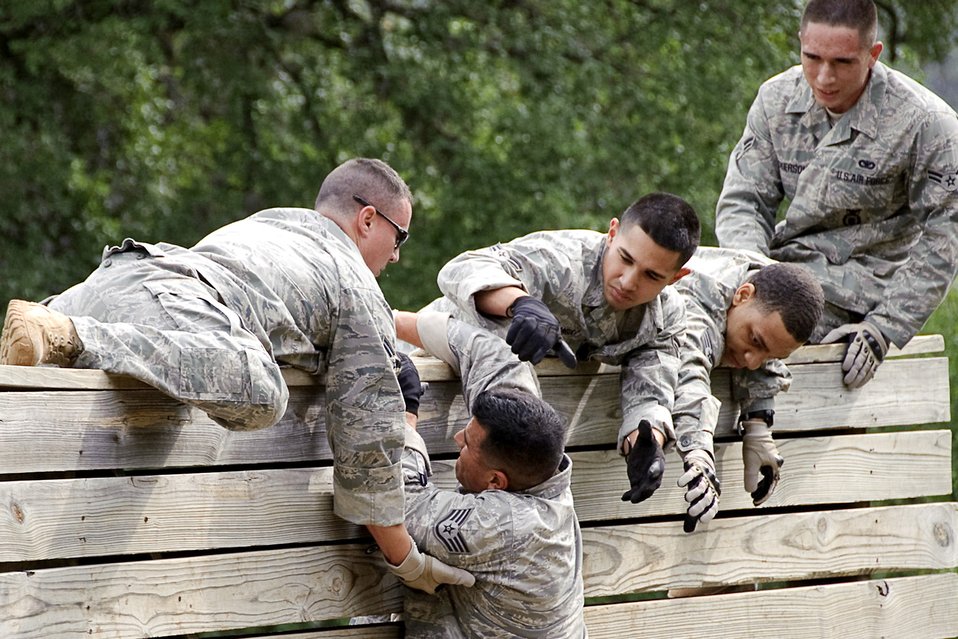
National Police Week 2010

Airmen from the 902nd Security Force Squadron at a Randolph Air Force Base, Texas, work together to climb over a high wall at Camp Bullis, Texas, while participating in an obstacle course May 12, 2010, during a National Police Week event.